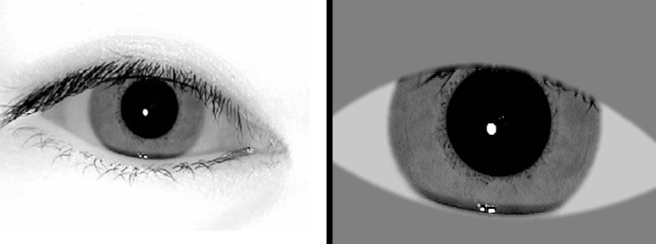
Iris Images

These iris images meet the biometric standard. The camera image on the left is run through commercial software to produce the image (right) that can be placed on the PIV card and for other uses such as an e-passport.